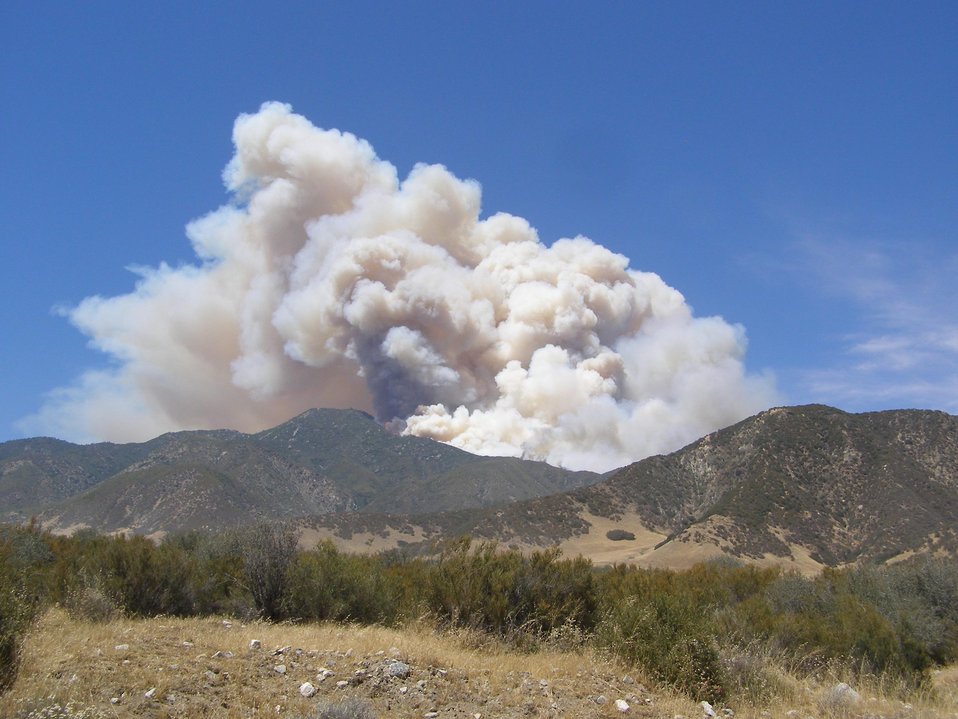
The Hathaway Fire is east of Hathaway Canyon on the northern portion of the Morongo Indian Reservation in the San Gorgonio Wilderness near Palm Springs, CA began on started Jun. 9, 2013 and the cause is still to be determined. The fire has burned approximately 3, 825 acres and is 95% contained as of Jun. 25, 2013.